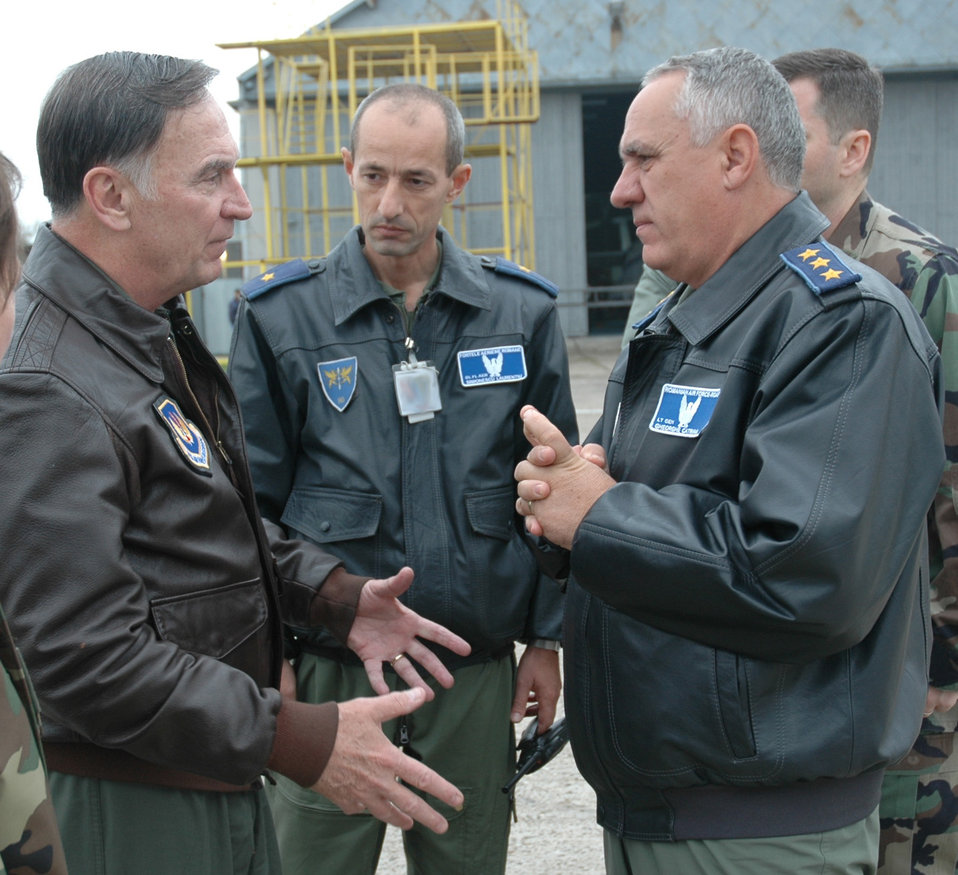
COMUSAFE builds on U.S.-Romania relationship

Gen. Tom Hobbins (left) discusses training options with Romanian Air Force Chief of Staff Lt. Gen. Gheorghe Catrina (right) and Air Flotilla General Simonescu Laurentin during a visit to Fetesti Air Base, Romania, Oct. 20. General Hobbins is the U.S. Air Forces in Europe commander.